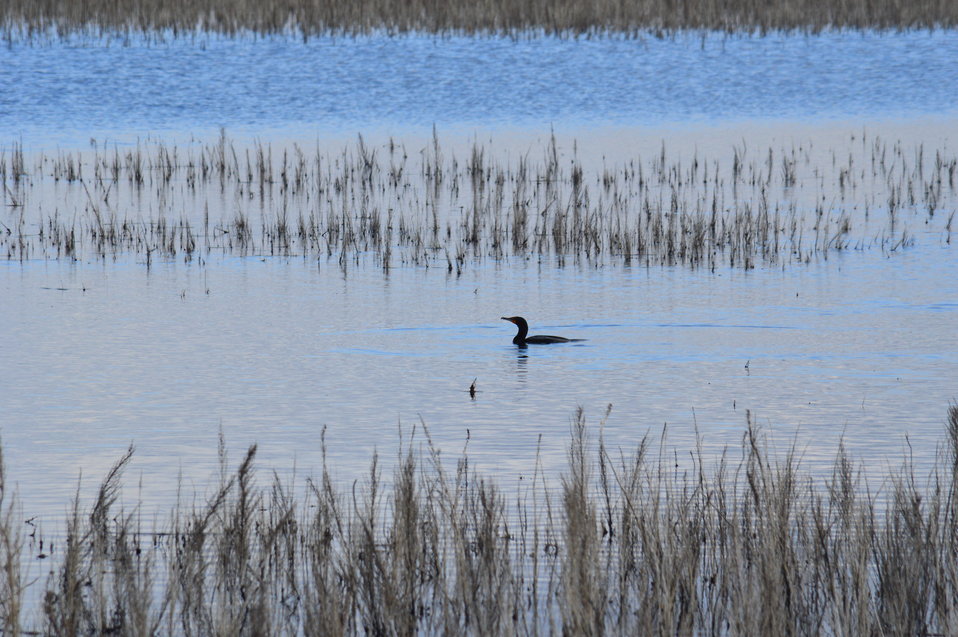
Waterfowl in Sand Lake

Scenery and wildlife at Sand Lake National Wildlife Refuge in South Dakota